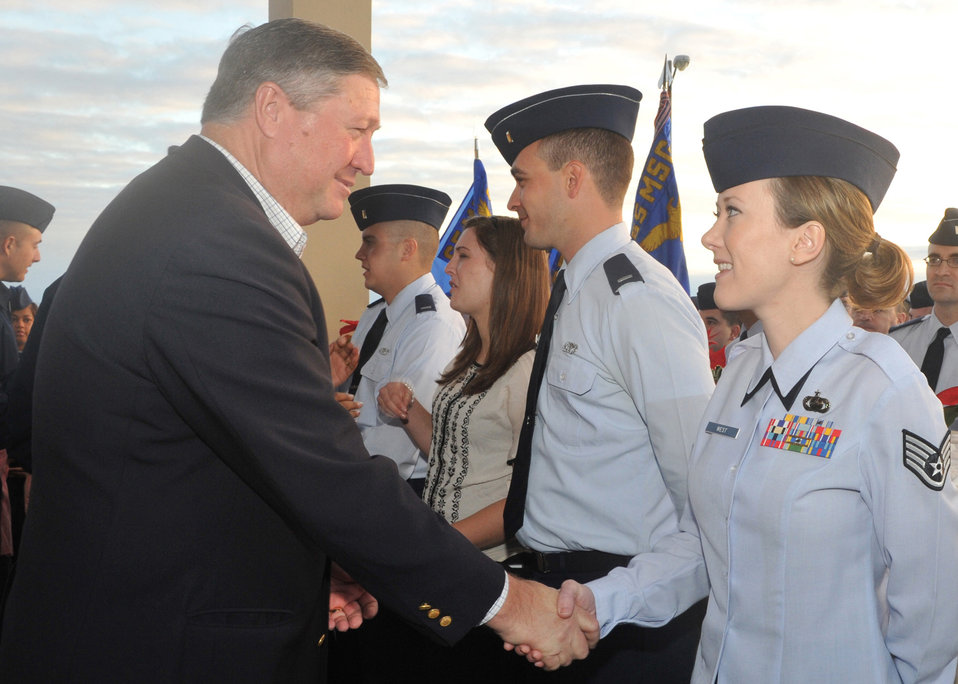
Secretary of the Air Force visits Lajes

Secretary of the Air Force Michael Donley shakes hands with Staff Sgt. Bethany West, 65th Contracting Flight, during a Warrior Welcome and Departure ceremony at Lajes Field, Azores, Dec. 19, 2011. The Secretary attended the ceremony for Lajes Airmen who have returned from deployments or who are about to deploy.